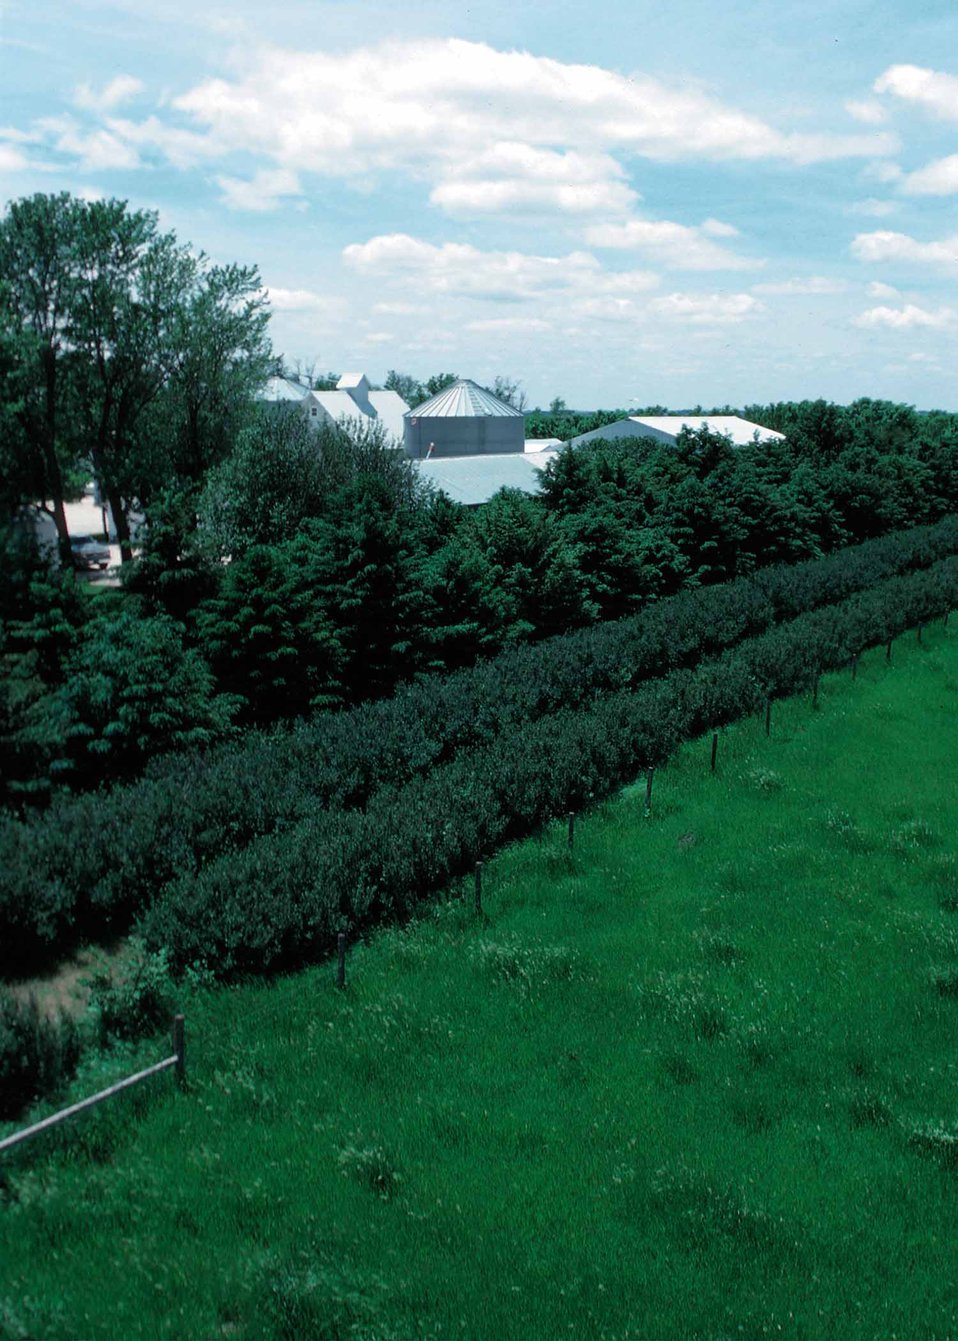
Farmstead windbreak in northern Iowa.